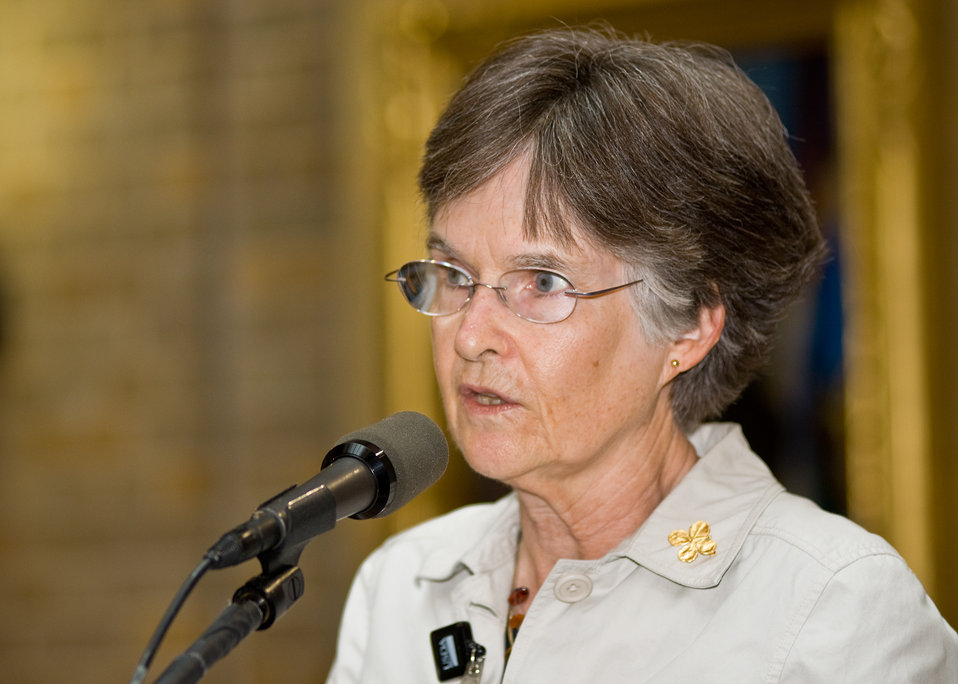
Ellen Mann, Library Technician, Special Collections, National Agricultural Library in Beltsville, Maryland spoke at the, 'Celebrating Science: Bed Bugs...Chocolate...and Beyond' event at the United States Department of Agriculture in Washington, DC, on Monday, October 4. Mann's discussion was, 'Art Informs Science.' The art of pomology - botanical prints of heirloom fruits and vegetables. USDA Photo 10di1515-05 by Bob Nichols.